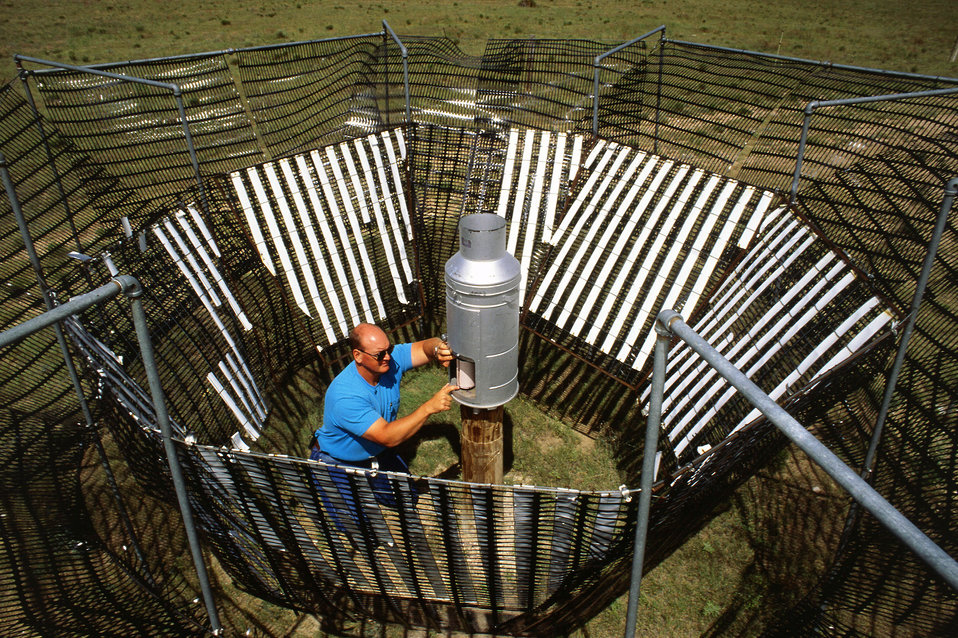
Surrounded by protective fencing that shields the rain gauge from wind currents, U.S. Department of Agriculture (USDA) Agricultural Research Service (ARS) hydrologic technician Michael Murphy retrieves precipitation data from a site on the 16,000-acre Central Plains Experimental Range.